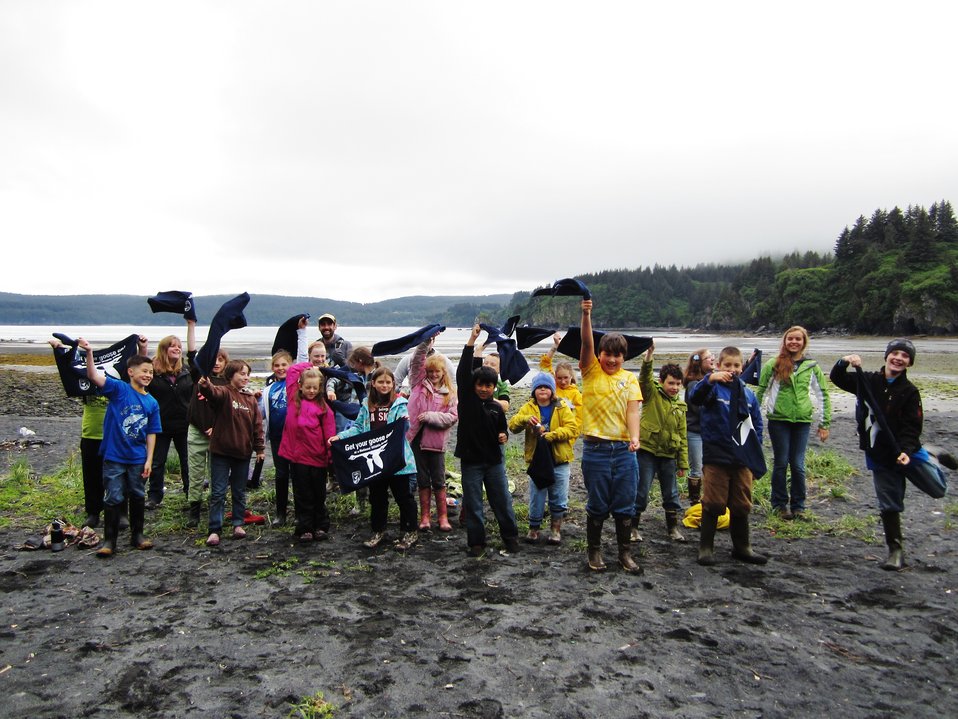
Get Your Goose On! - Alaska Style

Kodiak Refuge Summer and Science Art Camp.

Campers: McKenna Donohue, Bailey Mullen, Solomon Himelbloom, Tymber Bashem, Gage Johnson, Dominic Conol, Anastasia Gauthier, Abigail Groncki, Ashley Cowin, Leslie Spear, Brayden Pfister, Myah Morrison, Dylan Morrison, Olivia Young, Samantha Burnside, Tito Sabangan, Ava Pruitt, Greyson Lincoln. USFWS staff/volunteers: Kristen Riesberg, Ali Sutton, Rory Psotka and Kari Eschenbacher.

Credit: Kari Eschenbacher / USFWS

The Kodiak National Wildlife Refuge is a United States National Wildlife Refuge in the Kodiak Archipelago in southwestern Alaska, United States.

The Kodiak National Wildlife Refuge includes the southwestern two-thirds of Kodiak Island, Uganik Island, the Red Peaks area of Afognak Island and all of Ban Island in the archipelago. It encompasses 1,990,418 acres (8,054.94 km2).[2] The refuge is administered from offices in Kodiak.

The refuge contains seven major rivers and about 100 streams. It is a spawning ground for all six species of Pacific Ocean salmon, trout and several other fish species, as well as a nesting ground for 250 species of bird, many of which feed on salmon. The refuge has only six native species of mammals: Kodiak brown bear, red fox, river otter, ermine, little brown bat and tundra vole. The non-native mammals Sitka deer, mountain goat, Roosevelt elk, snowshoe hare and beaver were introduced to the archipelago between the 1920s and 1950s and are now hunted and trapped.

The climate of the refuge is that of southern Alaska, mild and rainy. Many areas in the refuge are densely forested with Sitka Spruce at lower elevations. There are grasslands in drier areas and at higher elevations. The refuge contains several small glaciers.